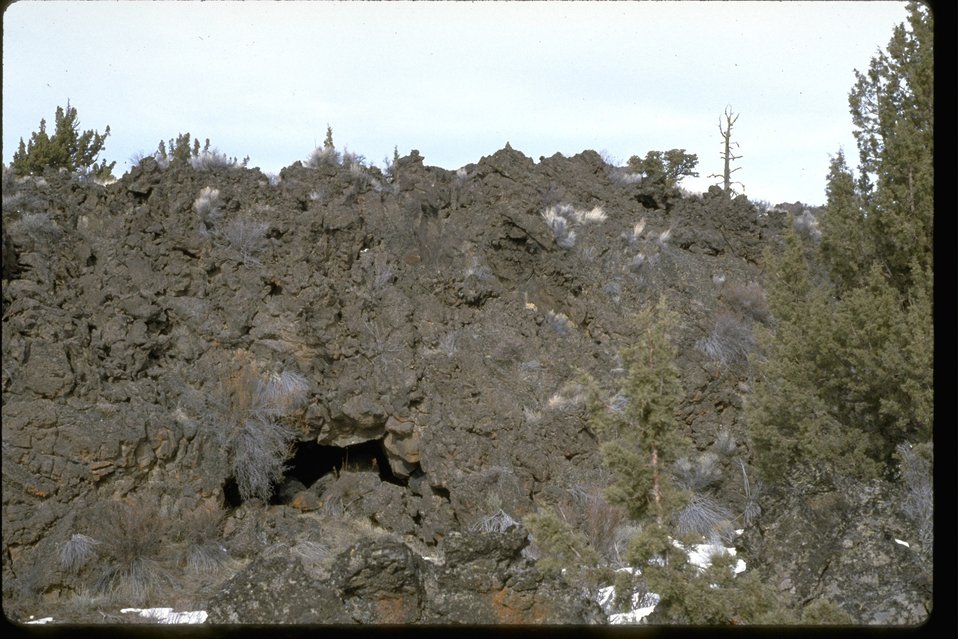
Squaw Ridge Lava Bed Wilderness Study Area. OR 1-3.